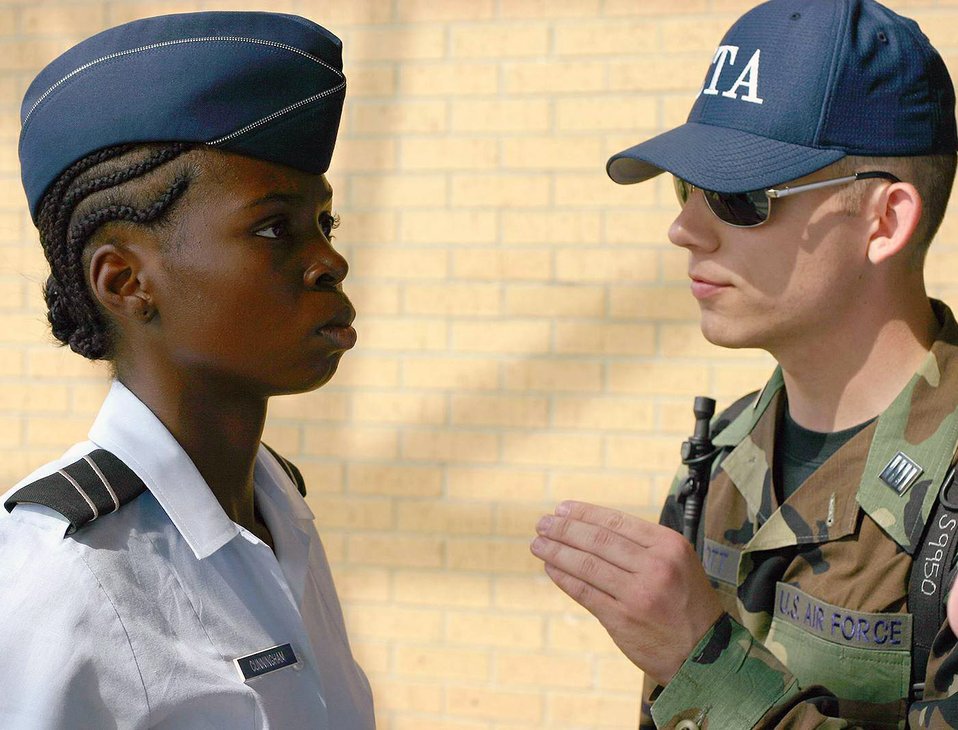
First wave of ROTC field training gets underway

Cadet Gregory Scott (right) motivates Cadet Ebony Cunningham during field training initial in-processing May 8 at Maxwell Air Force Base, Ala. More than 2,300 ROTC cadets, mostly rising juniors from 144 colleges nationwide, are projected to complete 2008 summer field training. Cadet Scott is a ROTC cadet training assistant from Utah's Brigham Young University, and Cadet Cunningham is from Det. 145 -- Florida State University.